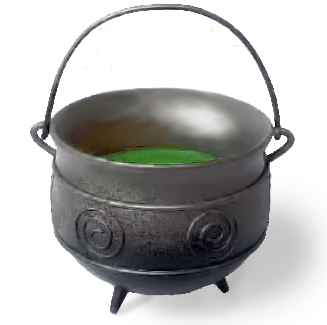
Nederlands: een heksenketel